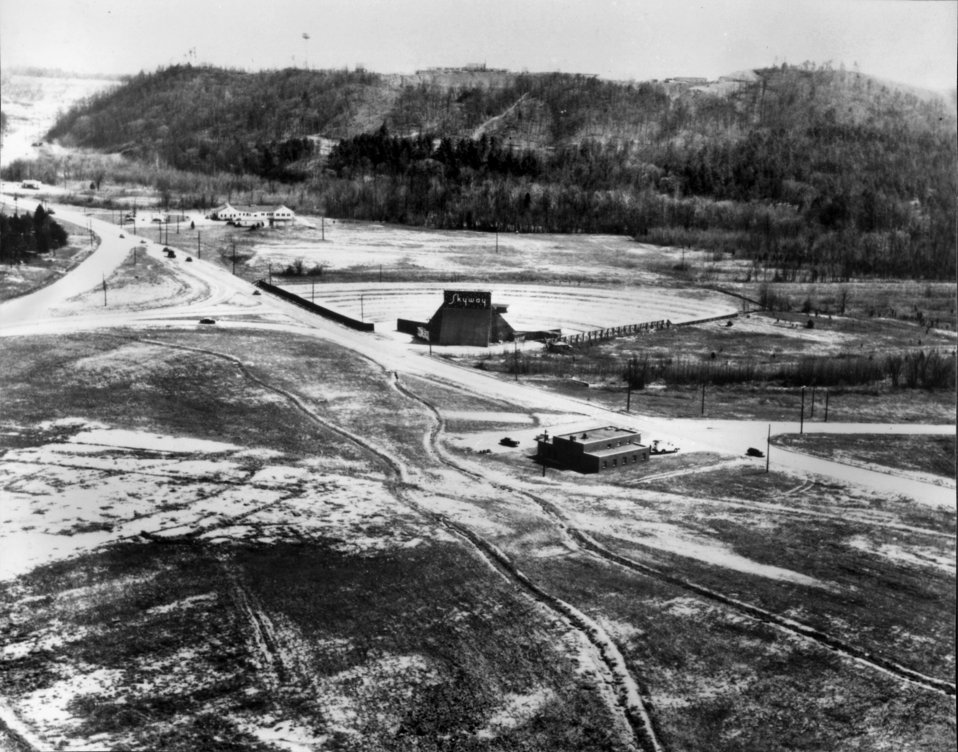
Skyway Drive In Movie Oak Ridge

55-0139 Ed Westcott 1955 Oak Ridge Tennessee